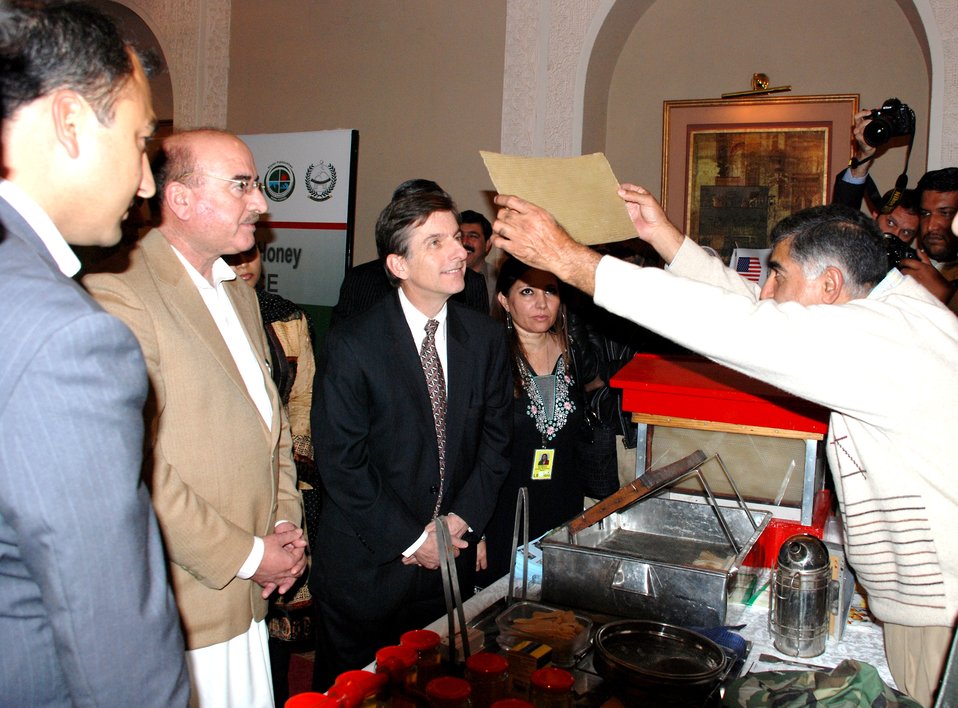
Industry Conference- Medicinal Plants and Honey

USAID Mission Director, Andrew Sisson talking to the Honey Processor